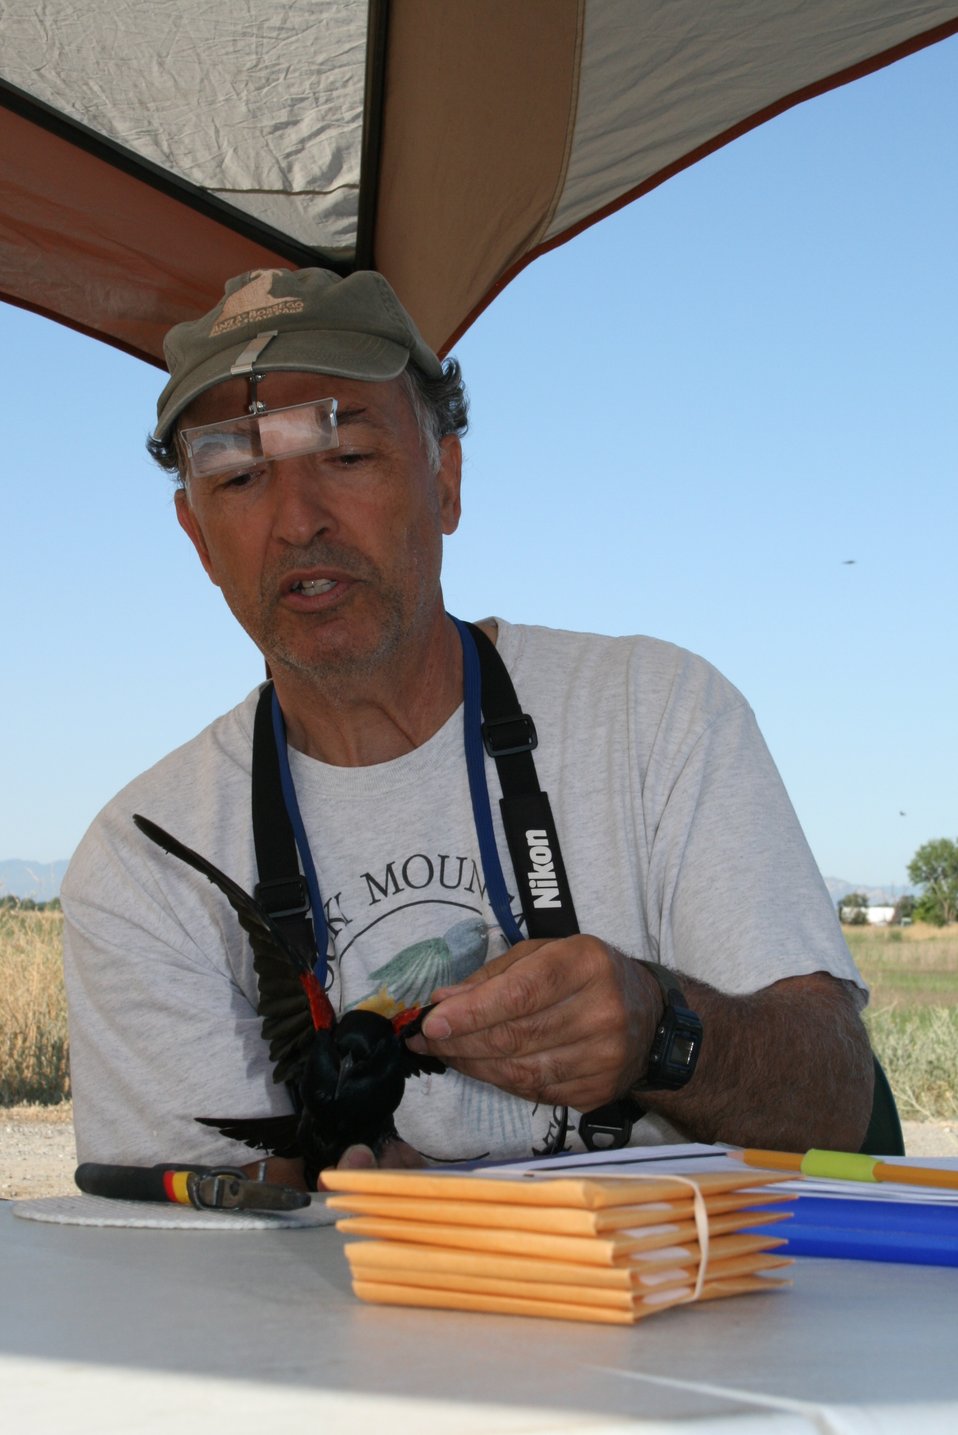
Male Tricolored Blackbird

Bob Meese examines the wings of a male Tricolored Blackbird (Agelaius tricolor).